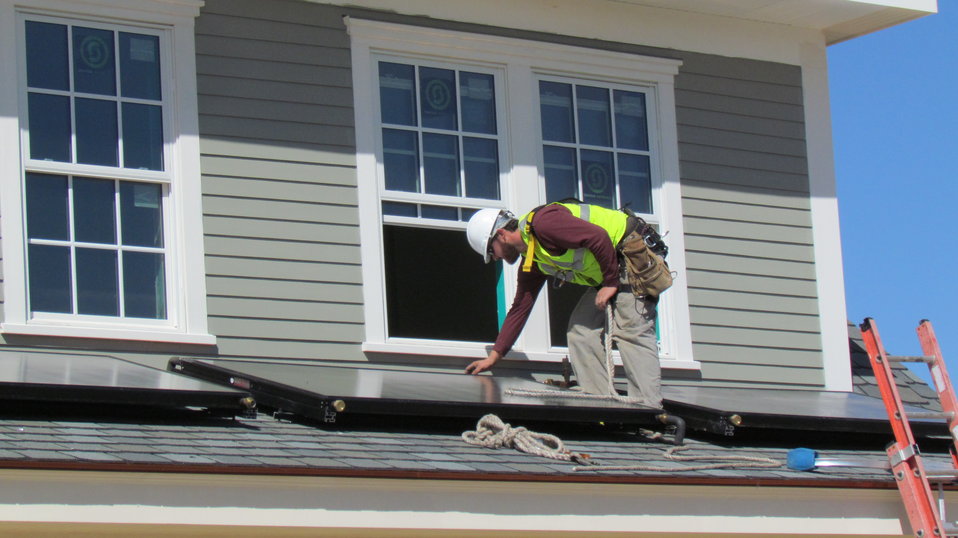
Close up of workman installing solar thermal collectors on porch of NZERTF.